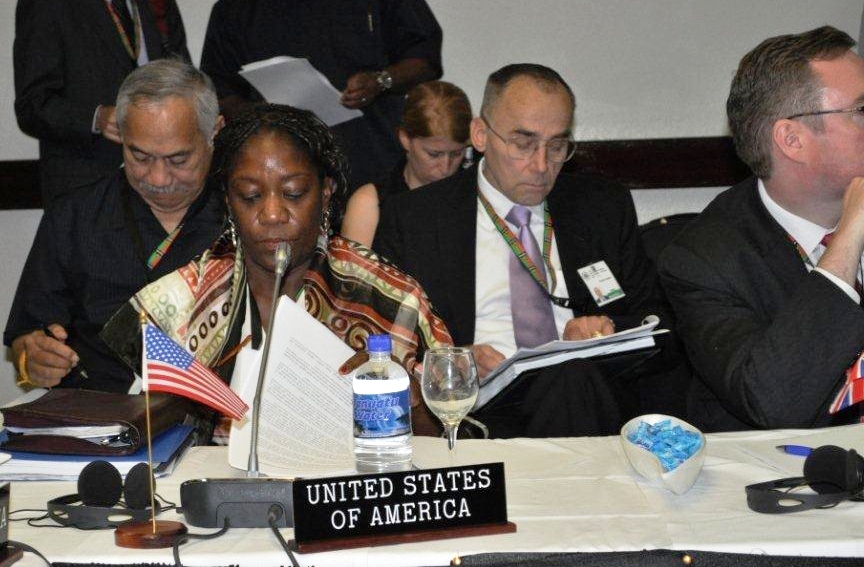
Deputy Assistant Secretary Reed Prepares for the Pacific Island Forum (PIF) Post Forum Dialogue

East Asian and Pacific Affairs Deputy Assistant Secretary Frankie Reed prepares for the start of the Pacific Island Forum (PIF) Post Forum Dialogue in Port Vila, Vanuatu, on August 5, 2010. [Pacific Island Forum Secretariat Public Affairs Unit photo]